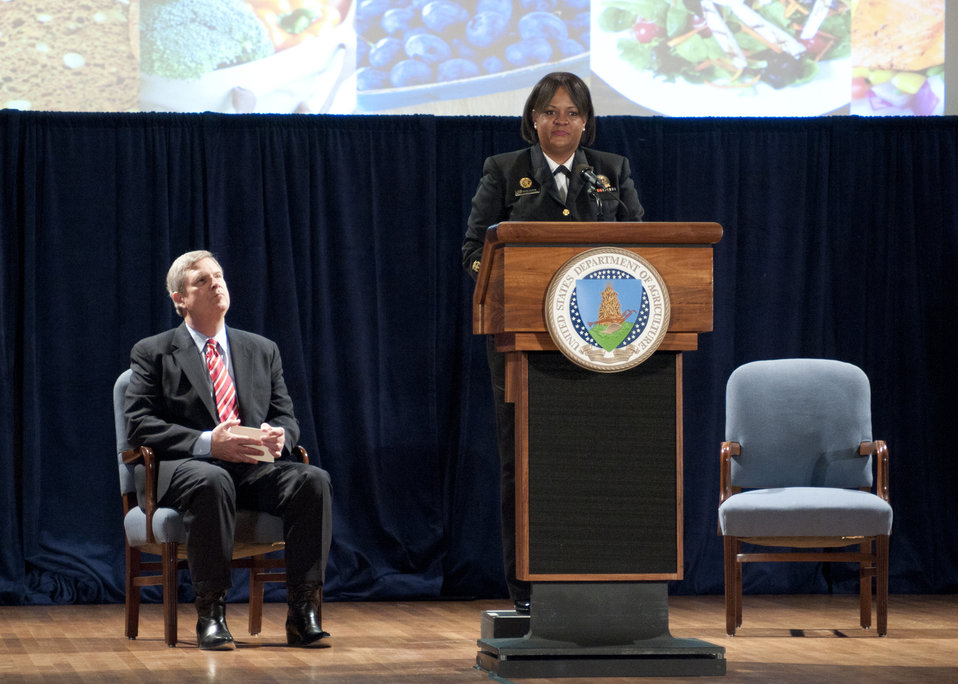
Surgeon General Regina Benjamin talks about the new Food Icon MyPlate (seated Agriculture Secretary Tom Vilsack) on Thursday, Jun. 2, 2011in the Jefferson Auditorium, U. S. Department of Agriculture (USDA). This new icon will replace the USDA’s MyPyramid image as the government’s primary food group symbol. MyPlate is an easy-to-understand visual cue to help consumers adopt healthy eating habits that are consistent with the 2010 Dietary Guidelines for Americans. MyPyramid will remain available to interested health professionals and nutrition educators in a special section of the new website.